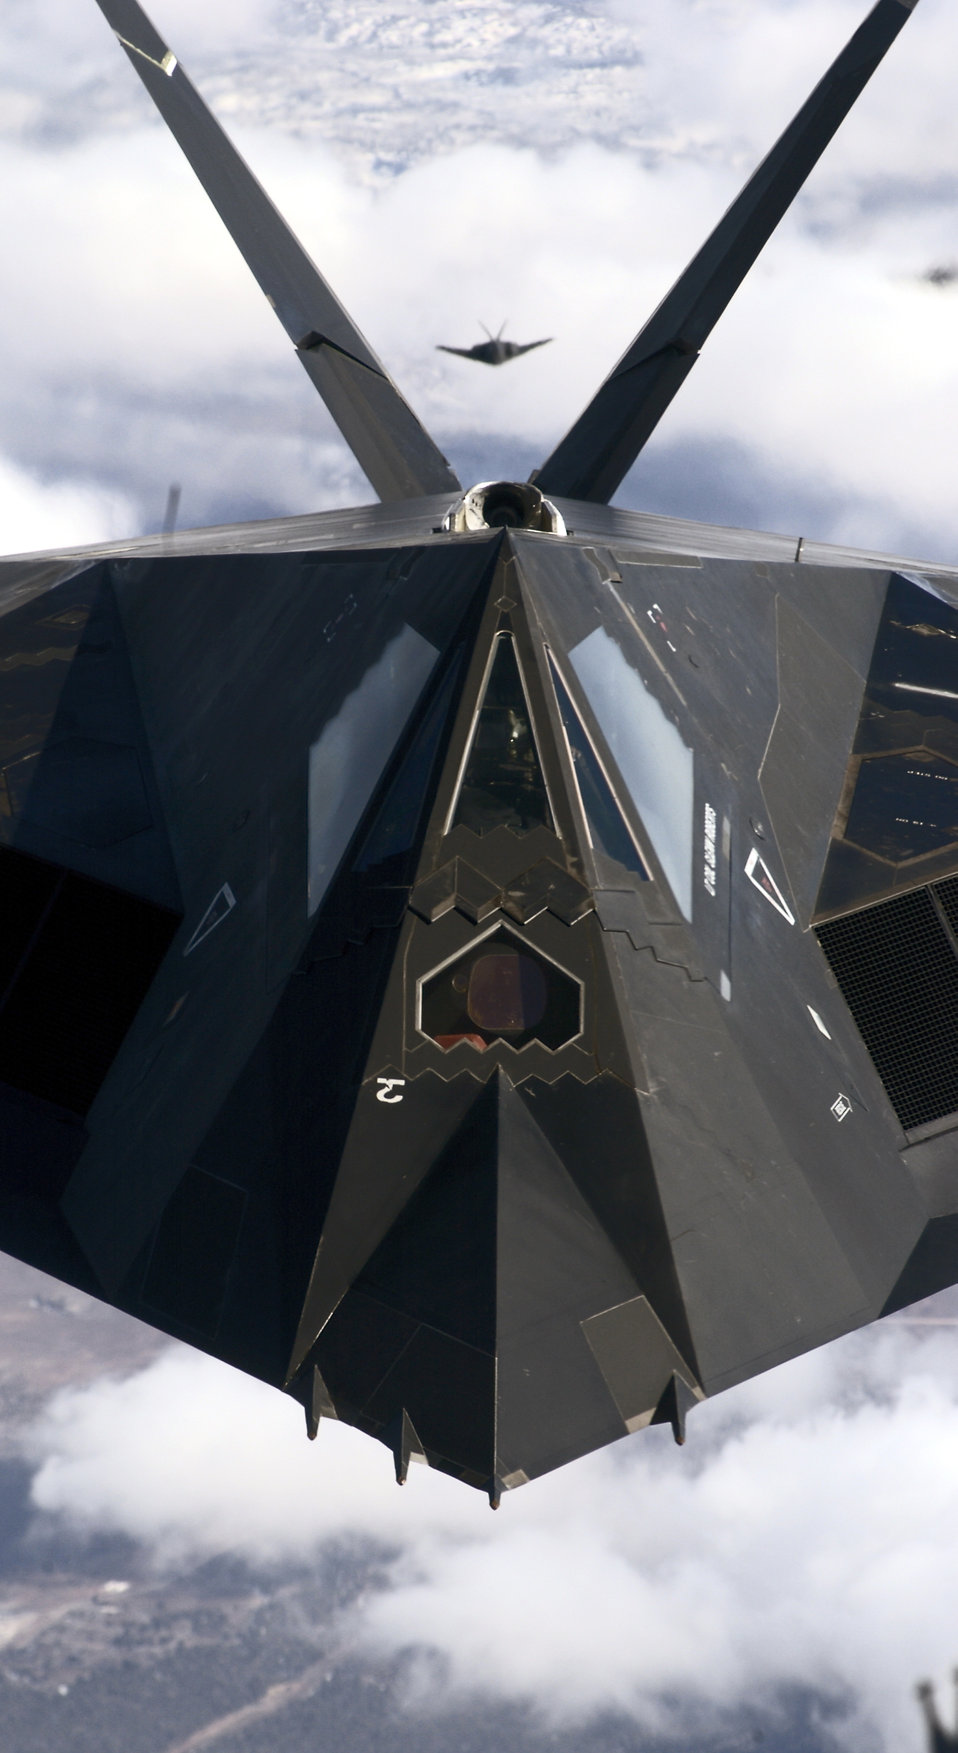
Nighthawk

HOLLOMAN AIR FORCE BASE, N.M. -- The F-117A Nighthawk is the world's first operational aircraft designed to exploit low-observable stealth technology. This precision-strike aircraft penetrates high-threat airspace and uses laser-guided weapons against critical targets.